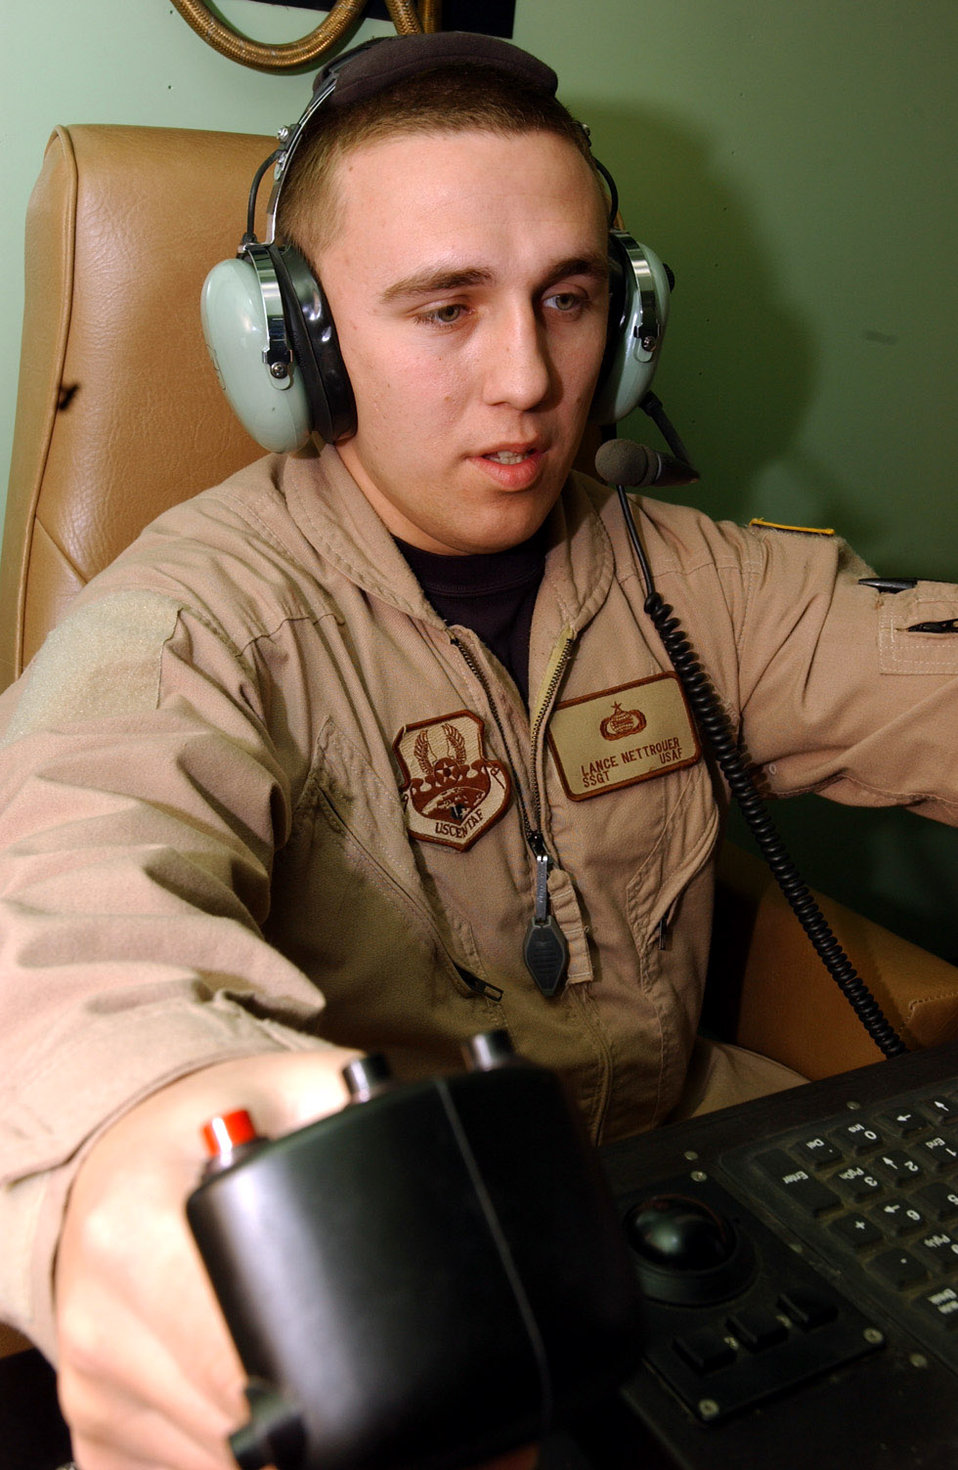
Predator on the move

Staff Sgt. Lance Nettrouer operates the sensors of an MQ-1 Predator unmanned aerial vehicle during a mission over Iraq Dec. 18 at Ali Base, Iraq. The Predator is a medium-altitude, long-endurance, remotely piloted aircraft capable of conducting armed reconnaissance against critical, perishable targets. Sergeant Nettrouer is assigned to the 361st Expeditionary Reconnaissance Squadron and is deployed from Creech Air Force Base, Nev.